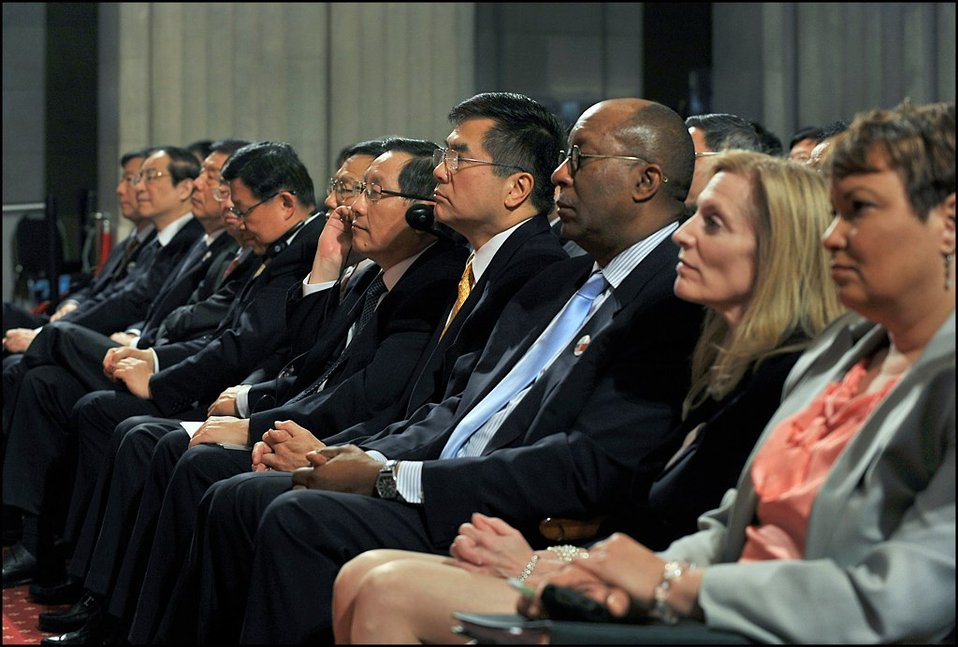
U.S.-China Strategic and Economic Dialogue

(L to R) Commerce Secretary Gary Locke (center), U.S. Trade Representative Ron Kirk, Treasury Under Secretary for International Affairs Lael Brainard and other senior officials from the United States and China attended the opening session and will attend the third meeting of the U.S.-China Strategic and Economic Dialogue.